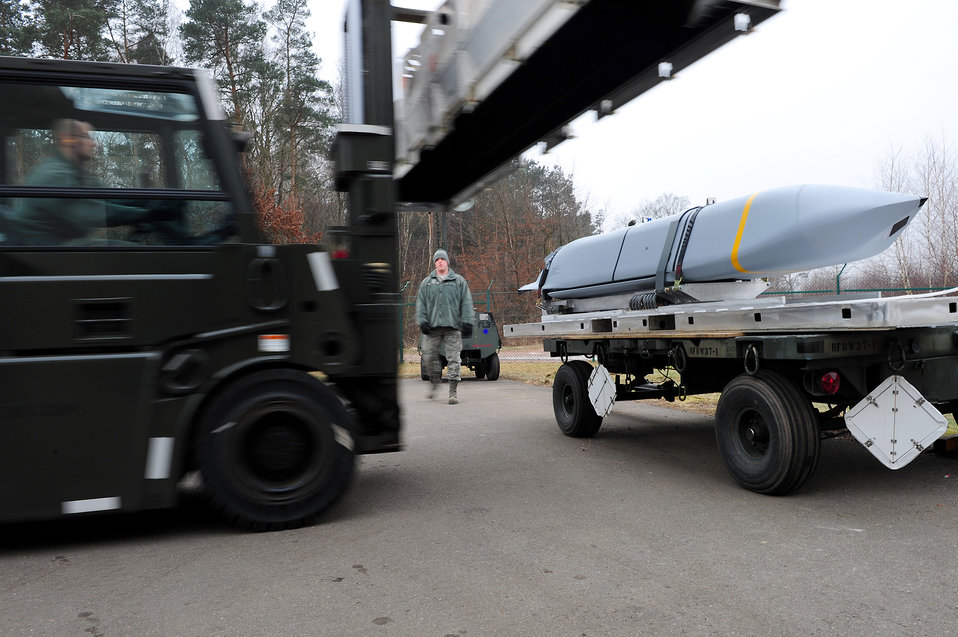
Missile modification

Airmen from the 86th Munitions Squadron get in position to secure a joint air-to-surface standoff missile Feb. 1, 2011, at Ramstein Air Base, Germany. The 2,000-pound, semi-stealth, long-range weapon requires various maintenance and test operations to ensure its efficiency.